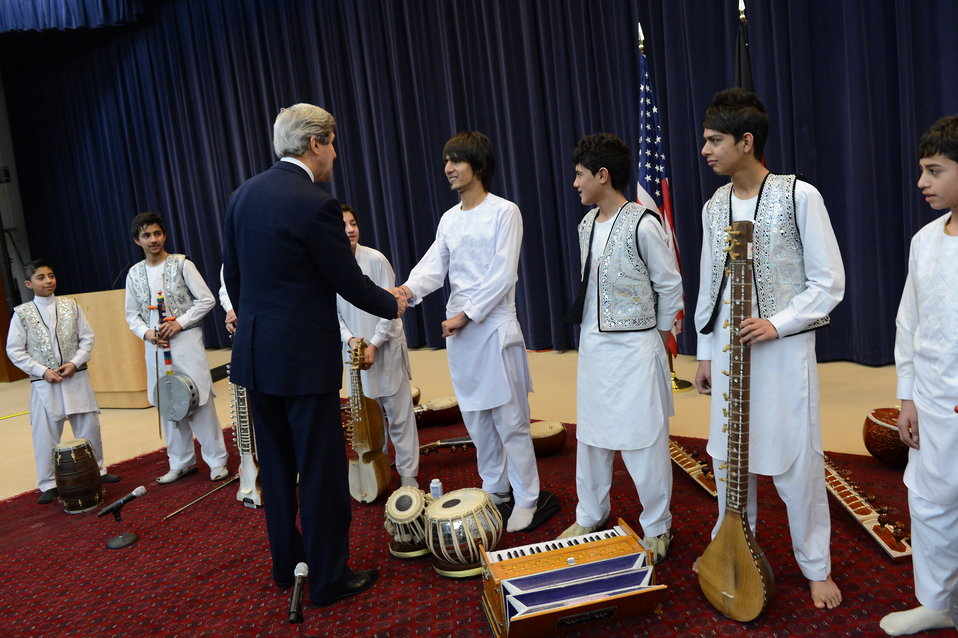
Secretary Kerry Surprises Children from the Afghan National Institute of Music

U.S. Secretary of State John Kerry surprises children from the Afghan National Institute of Music at their performance at the U.S. Department of State in Washington, D.C., February 4, 2013.